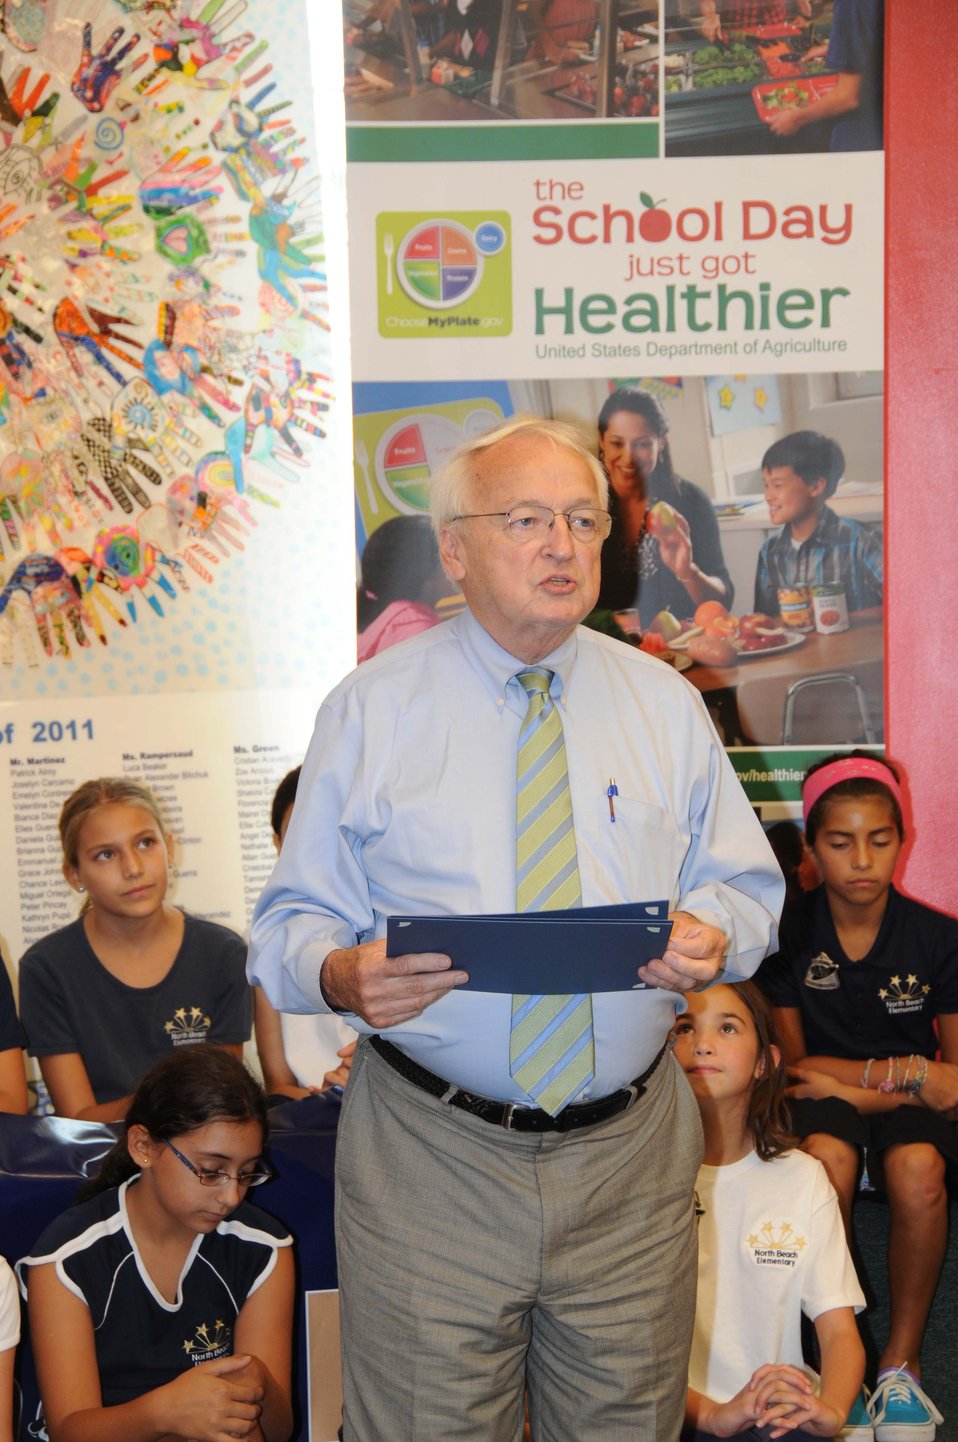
Under Secretary presents certificate

U.S. Department of Agriculture (USDA) Under Secretary for Food, Nutrition and Consumer Services Kevin Concannon presents a certificate of appreciation to Miami-Dade County School Superintendent Alberto Carvalho at North Beach Elementary School in Miami, FL on Aug. 23, 2012. North Beach Elementary School was one the 177 schools in the Miami-Dade County Public Schools District to achieve a Bronze Award in the Healthier US School Challenge (HUSSC). HUSSC is a key part of the First Lady’s Let’s Move! initiative to end childhood obesity in a generation. The Challenge is a voluntary commitment to meet USDA’s rigorous standards for physical activity, nutritious meals and nutrition education.